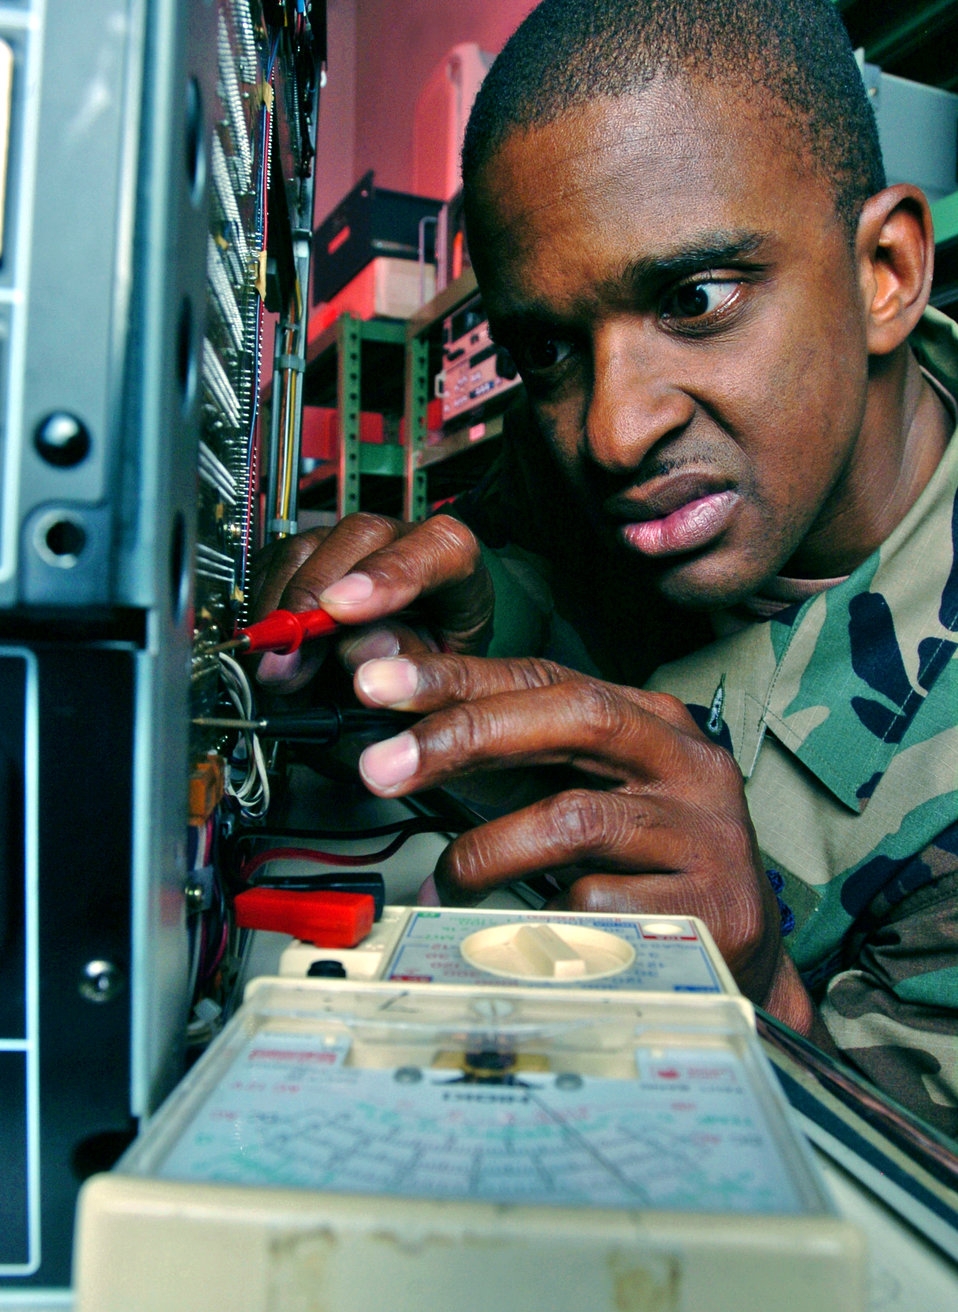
Closed circuit screening

YOKOTA AIR BASE, Japan -- Master Sgt. Mark Taylor checks a circuit board on a video tape recorder during an inspection. He is a broadcast maintainer from Air Force News Agency's Operating Location-C here. They maintain equipment for American Forces Network-Tokyo and other Air Force broadcast detachments in the area. The recorder is used to edit, record and play AFN news stories here.